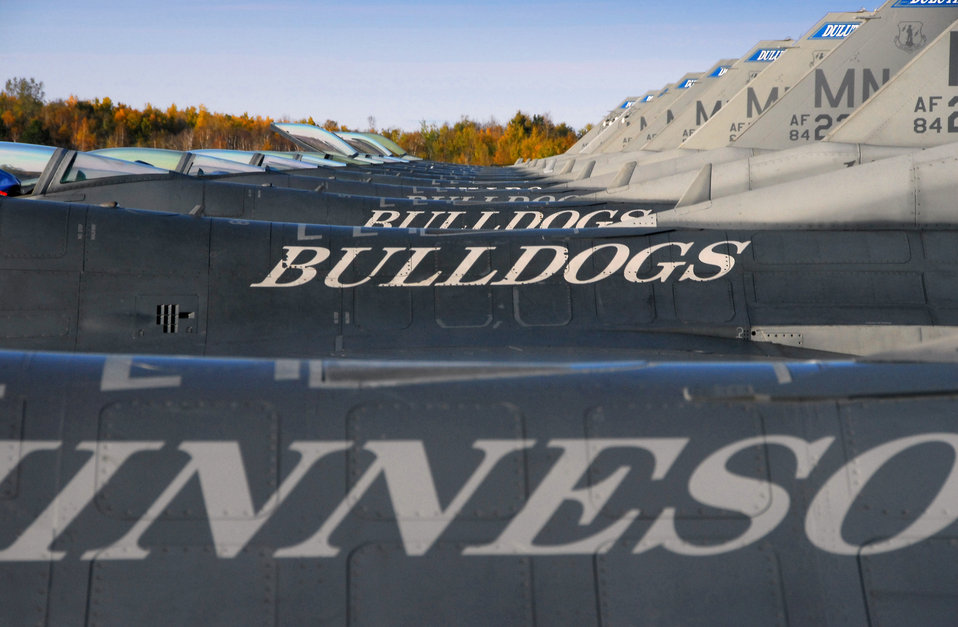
Falcons and Bulldogs

F-16 Fighting Falcons are shown parked on the Duluth Air National Guard Base flightline Oct. 13 in Minnesota. The F-16s are assigned to the 148th Fighter Wing, known as the Bulldogs, in Duluth.